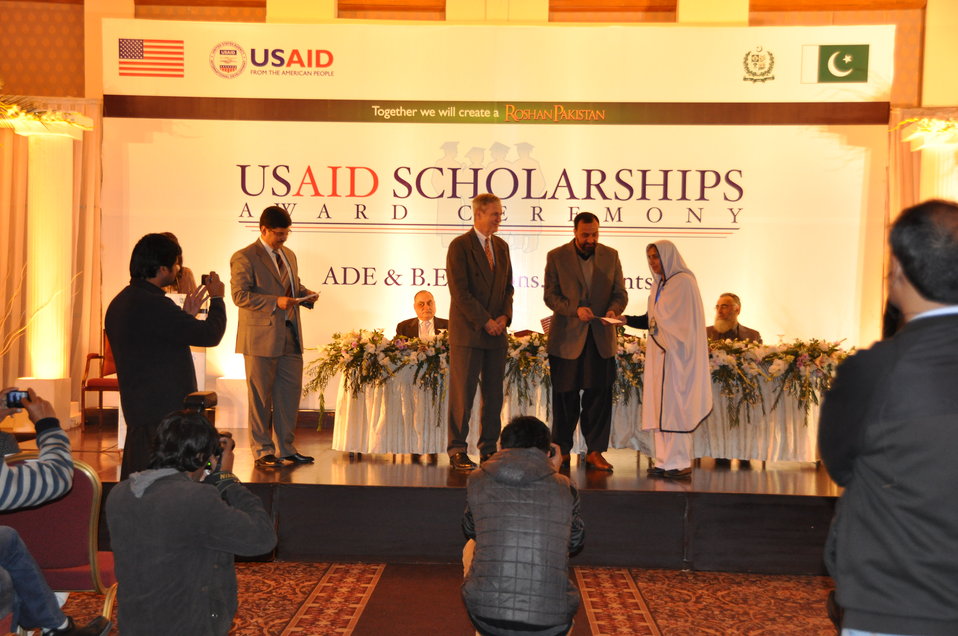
Scholarship recipient while receiving her scholarship